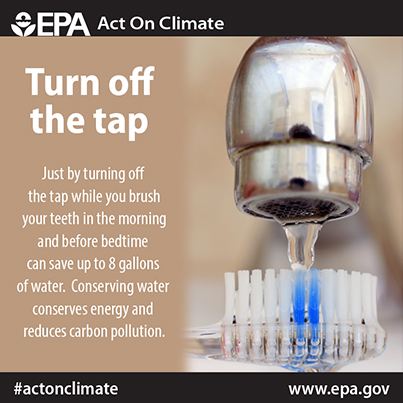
Turn Off the Tap

Conserving water helps conserve energy and reduce carbon pollution.

Just by turning off the tap while you brush your teeth in the morning and before bedtime, you can save up to 8 gallons of water! That adds up to more than 200 gallons a month.